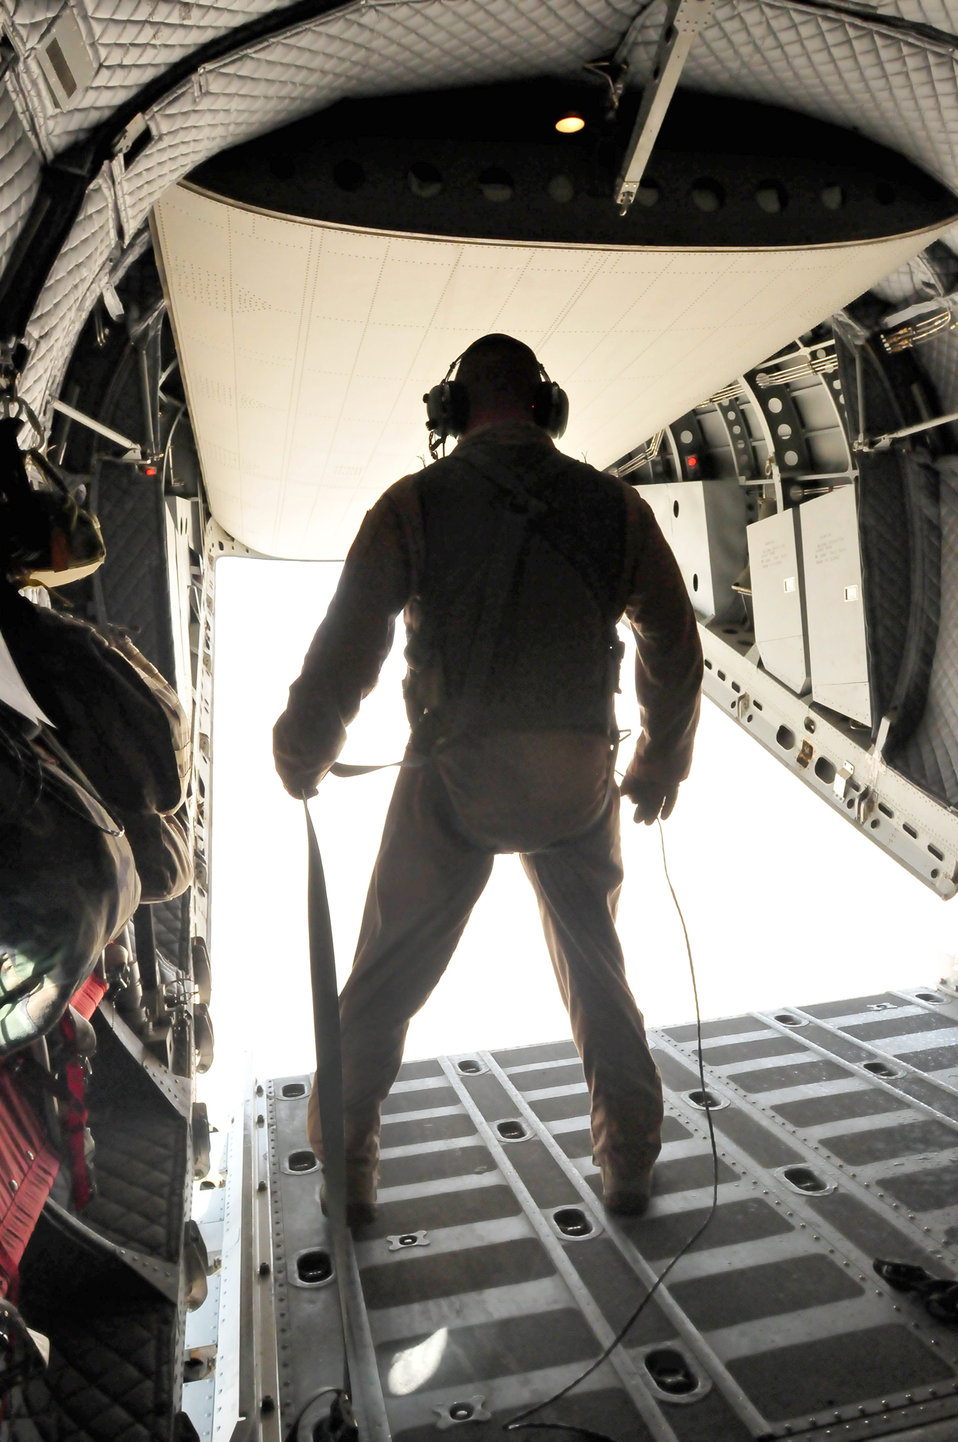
C-27 over Afghanistan

Master Sgt. Chris Ringland set ups to launch the cargo from the back of a C-27 Spartan during an airdrop July 1, 2010 over Afghanistan. This is the first air drop conducted by an aircrew for the C-27 in Afghanistan. Sergeant Ringland is with the 438th Air Expeditionary Advisory Group.